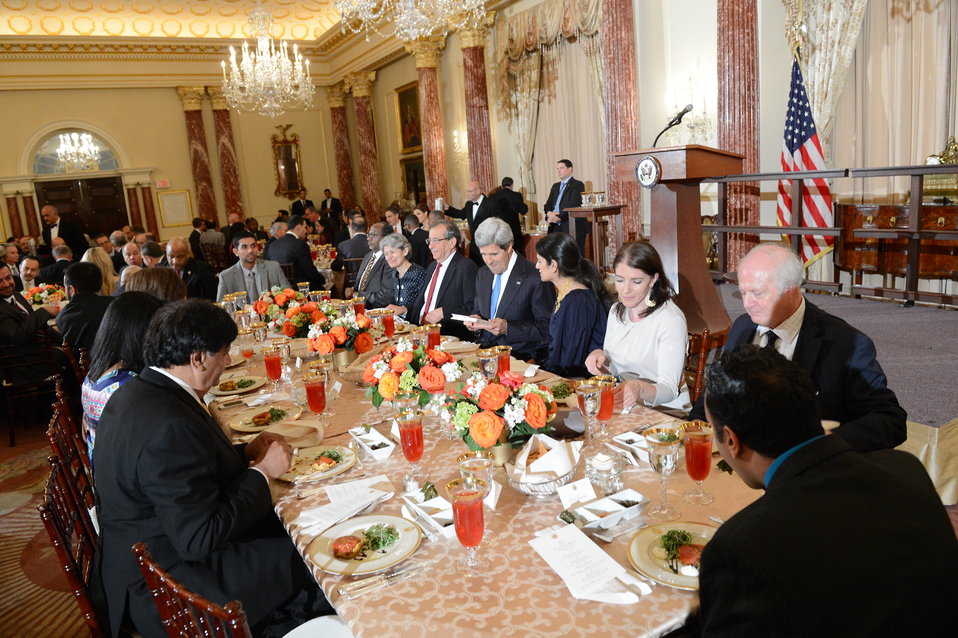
Secretary Kerry Hosts an Iftar

U.S. Secretary of State John Kerry hosts an Iftar to commemorate the month of Ramadan at the U.S. Department of State in Washington, D.C., on July 24, 2013.